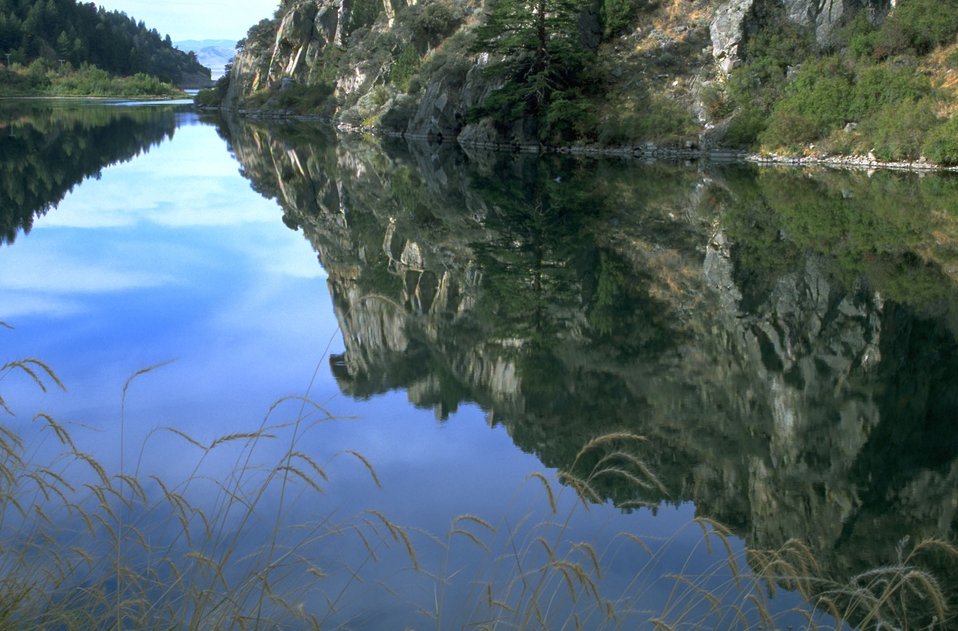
Closeup of reflections on Trail Creek